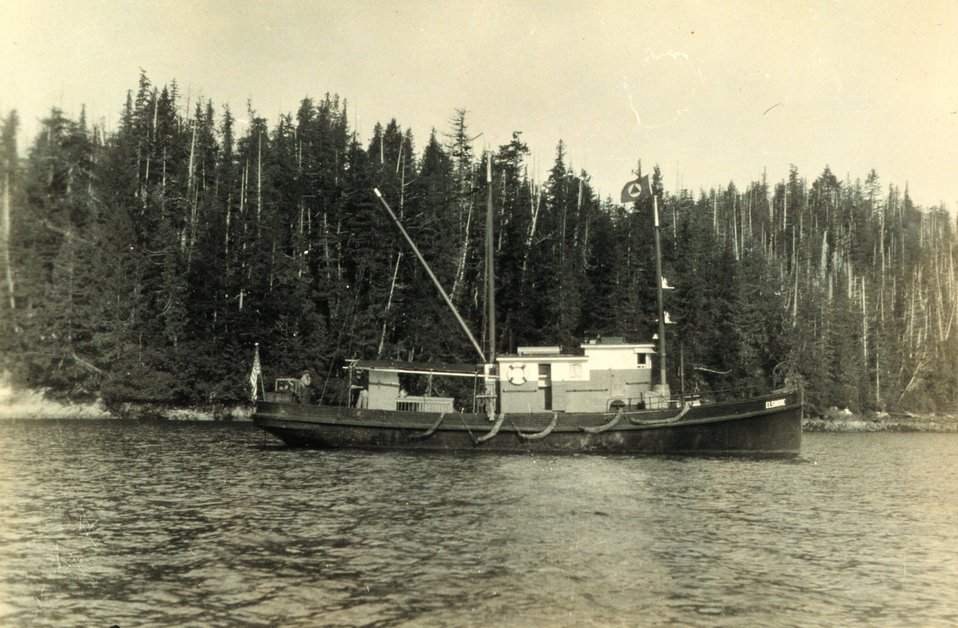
The chartered launch ELSINORE. Used for wiredrag.